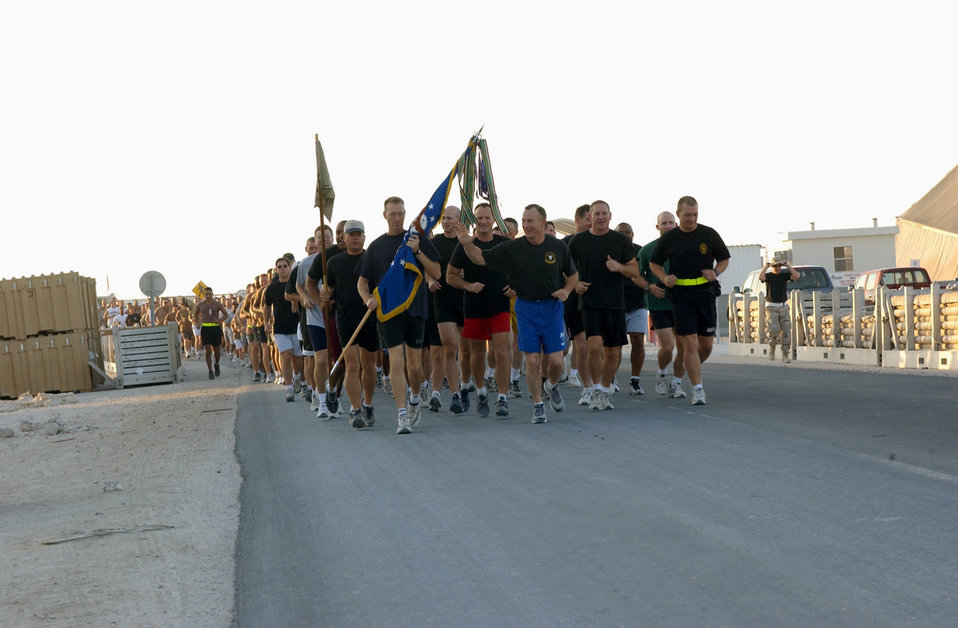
Getting fit to fight

SOUTHWEST ASIA -- Chief Master Sgt. Richard Small (carrying Air Force flag) and Col. Jack Egginton (waving) lead more than 600 airmen from the 379th Air Expeditionary Wing in a fitness run at a forward-deployed location Oct. 29. The run was a show of support for the new Air Force fitness standards. Small is the wing's command chief master sergeant, and Egginton is its commander.